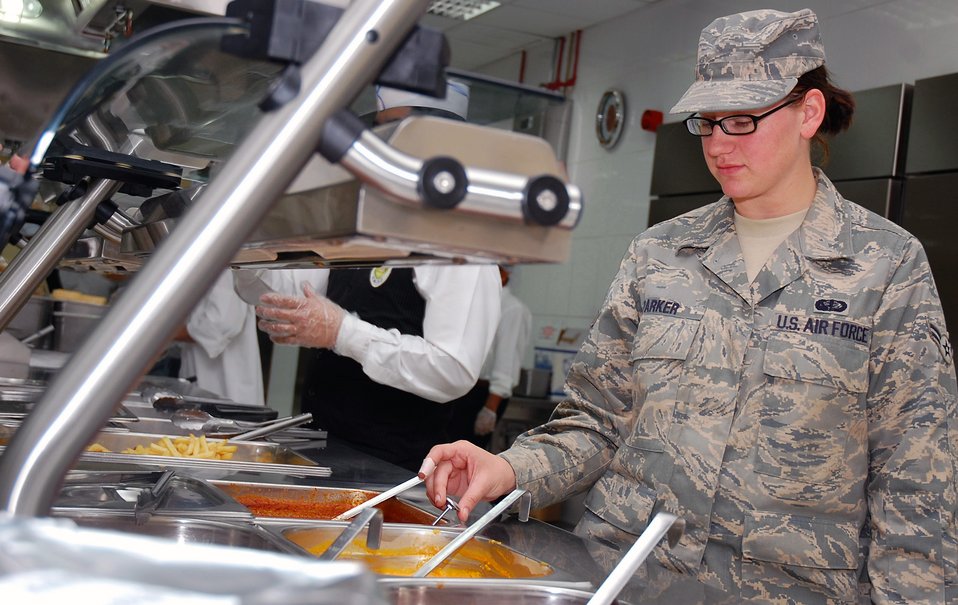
Deployed desert dining is delightful at the DFAC

Airman 1st Class Katherine Parker, 386th Expeditionary Services Squadron food services specialist, performs a quality assurance temperature check Nov. 2 here. Airman Parker is deployed from Minot Air Force Base, N.D.